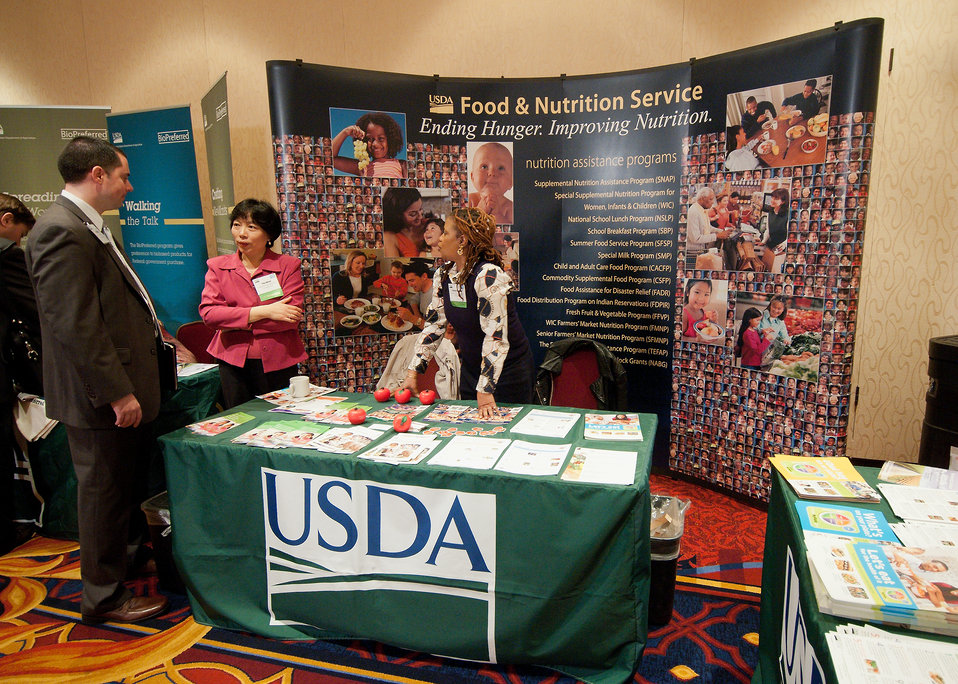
From left: Eric Steiner, Senior Professional Staff, Senator Pat Roberts, Kansas, Dr. Yibo Wood, Global Coordinator, Food and Nutrition Service and Celeste Perkins, Partnership and Outreach, Food and Nutrition Service. Steiner a former Food and Nutrition Service employee asked Wood and Perkins about new nutrition programs in the exhibit hall at the 2012 Agricultural Outlook Forum, “Moving Agriculture Forward, Growing, Innovating and Celebrating 150 Years” held at the Crystal gateway Marriott Hotel Arlington, Virginia, Friday, February 24, 2012. This year’s forum coincides with the 150th anniversary of the Department of Agriculture addressing economics, marketing, research, food safety, nutrition, conservation, rural development, alternative energy, trade and many other agricultural issues.